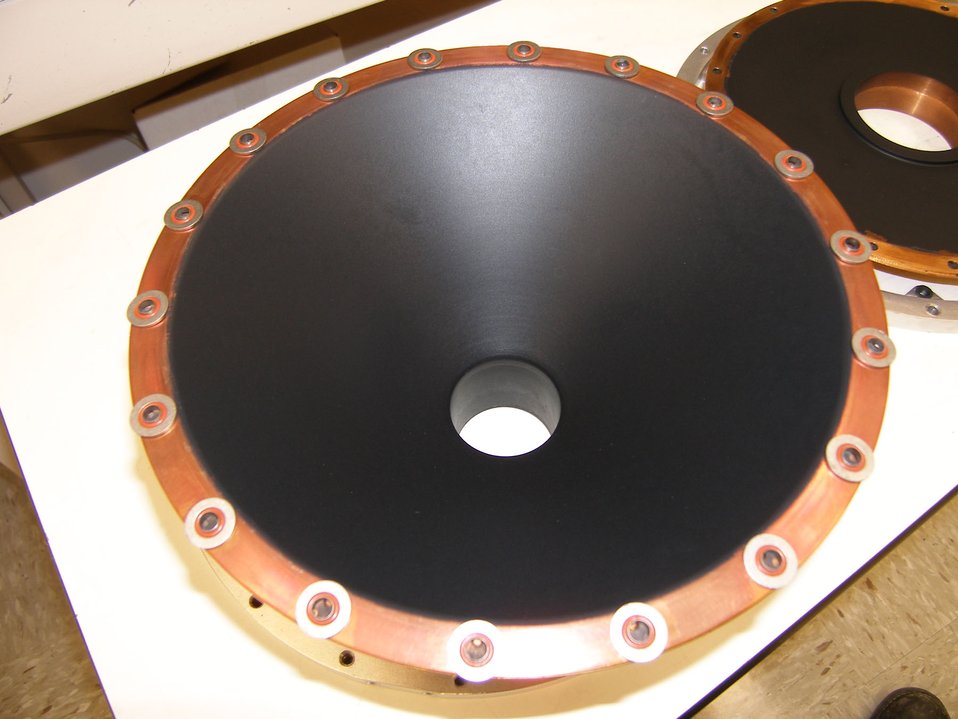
Nanotube; Laser